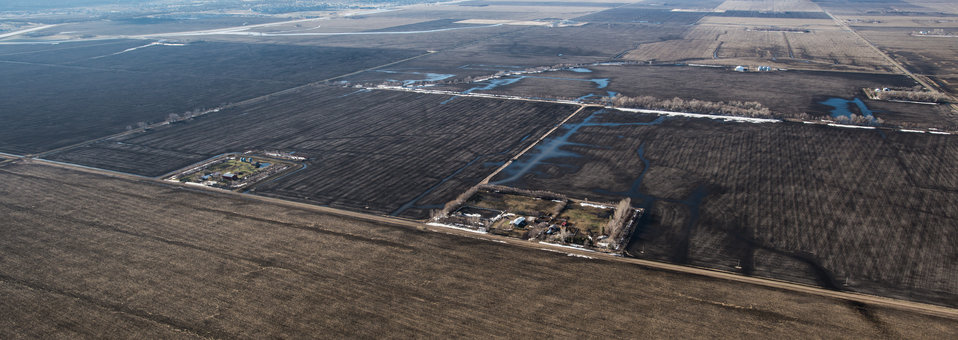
William Lisberg used the U.S. Department of Agriculture (USDA) Environmental Quality Incentives Program (EQIP) to receive an incentive payment to help in the cost of the earthen ring dike construction around his farmstead (left), in Cass County, ND, on Tuesday, April 30, 2013. A week ago, the farmstead was covered in snow. Now thawed, the water fills the drainages. For information about this and other programs from the USDA the Natural Resources Conservation Service (NRCS) Red River Basin Initiative (RRBI) please see www.mn.nrcs.usda.gov/news/features13/RRBI.html.